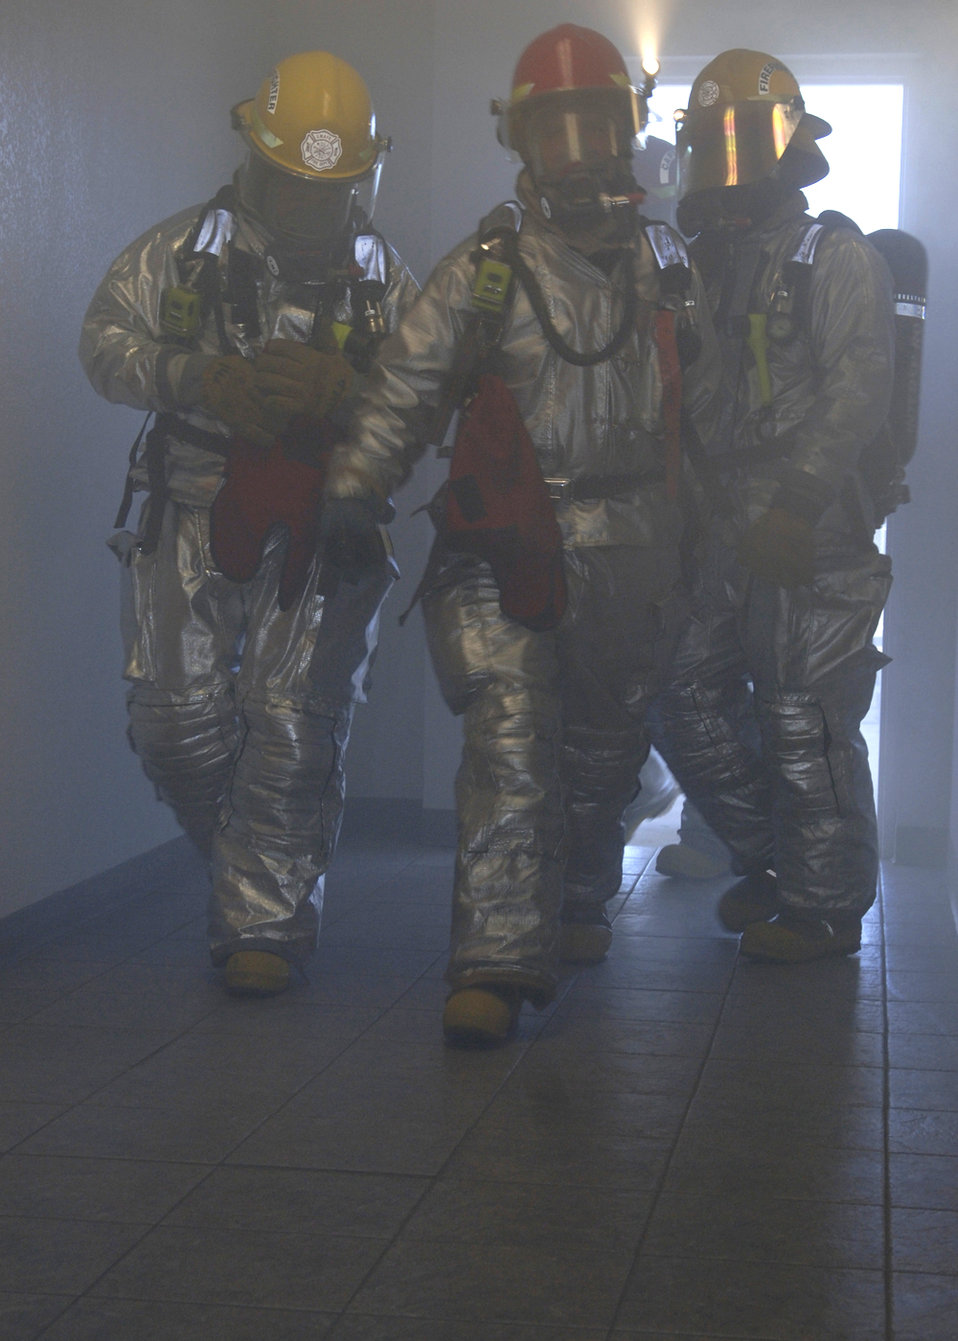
Rescue and readiness

Senior Airman Michael Lewis, Airman 1st Class Robert Whitaker and Tech. Sgt. Steven Nordlund begin to open doorways for ventilation during a simulated fire and evacuation at Davis-Monthan Air Force Base, Ariz., in preparation for an operational readiness inspection. The three Airmen are firefighters assigned to the 355th Civil Engineer Squadron.